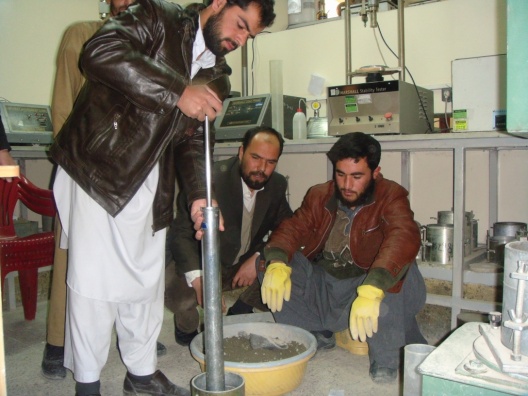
Engineering internship program - IRP